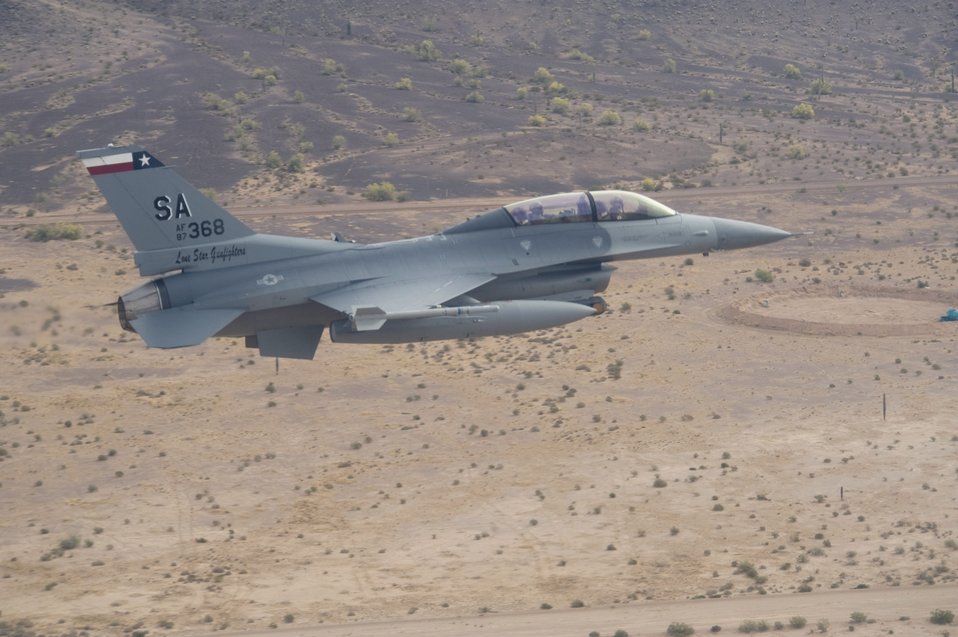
Airmen train next generation

An instructor pilot with the Texas Air National Guard’s 149th Fighter Wing makes a low-level pass over the Barry Goldwater Bombing Range after completing an Exercise Coronet Cactus training mission April 24 near Tucson, Ariz. The 149th Fighter Wing trains active duty F-16 pilots prior to assignment to their first duty station.